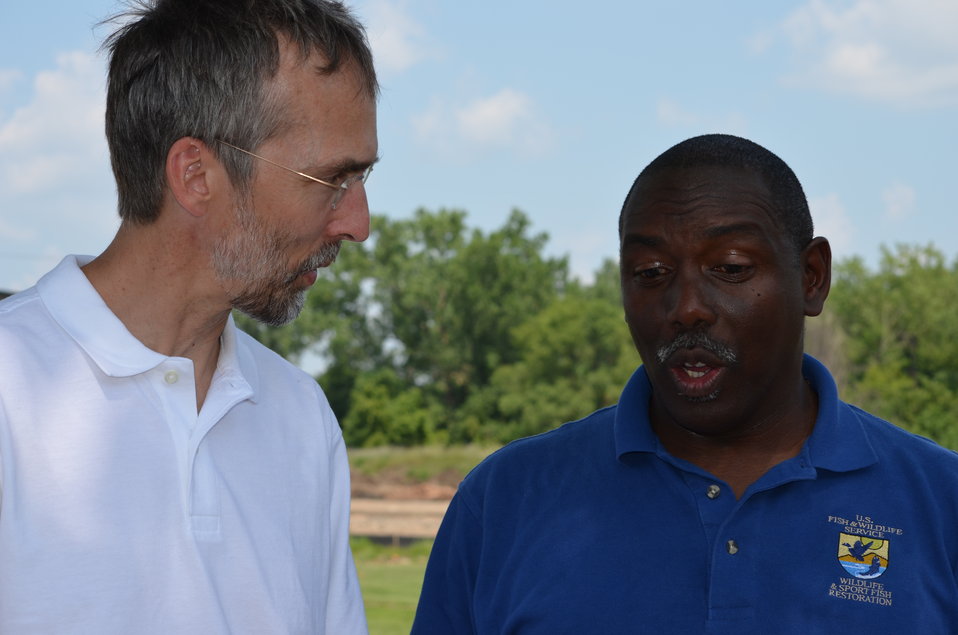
Joe Hautman, 2012 Federal Duck Stamp artist, and AD Migratory Birds Jerome Ford.